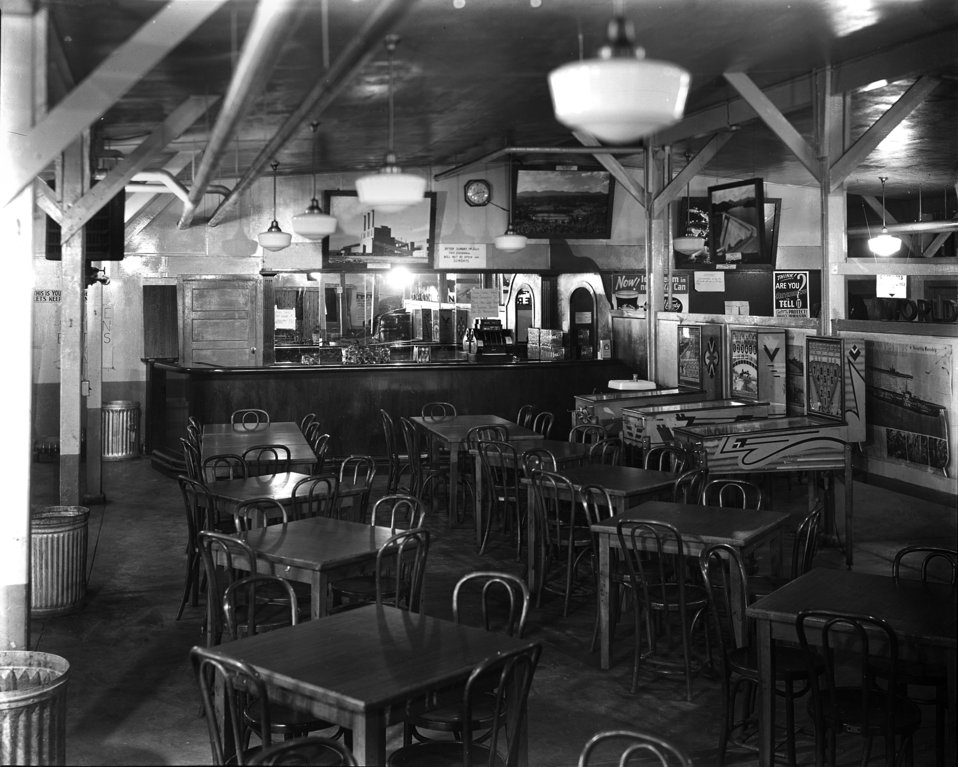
Interior of PX (post exchange) Oak Ridge

S-209 DOE photo by Ed Westcott Interior of PX (post exchange) Oak Ridge Tennessee 1943